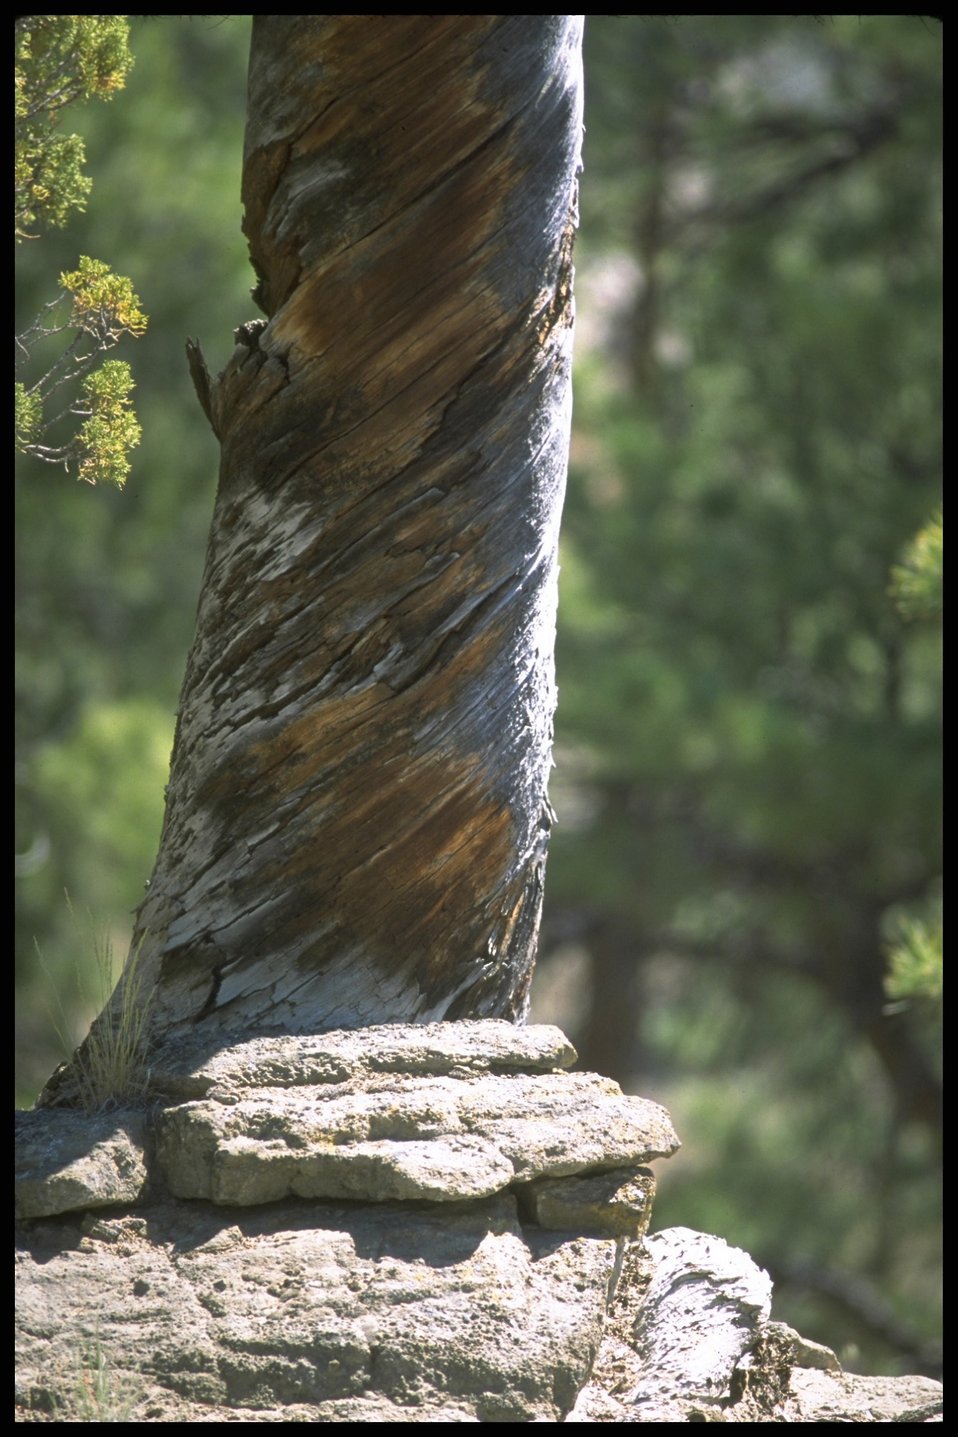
Lost Forest, Lakeview District.